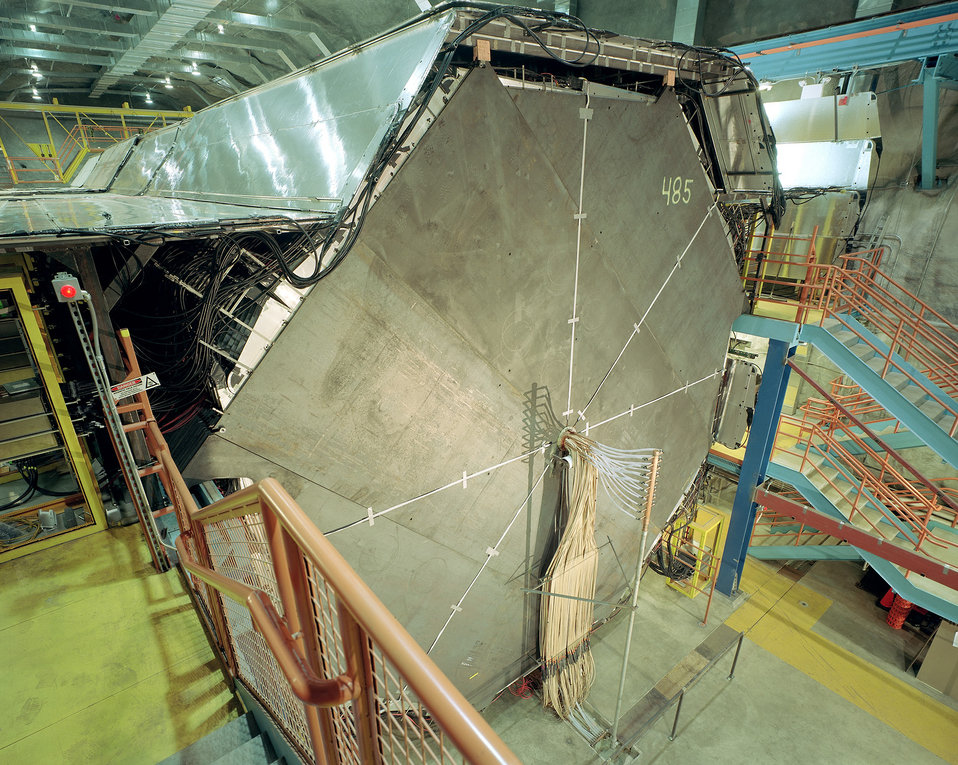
The MINOS Far Detector is located in a cavern half a mile underground in the Soudan Underground Laboratory, Minnesota.

The 100-foot-long MINOS far detector consists of 486 massive octagonal planes, lines up like the slices of a loaf of bread. Each plane consists of a sheet about 25 feet high and one inch thick, with the last one visible in the photo. The whole detector weighs 6,000 tons. Since March 2005, the far detector has recorded neutrinos from a beam produced at Fermilab.